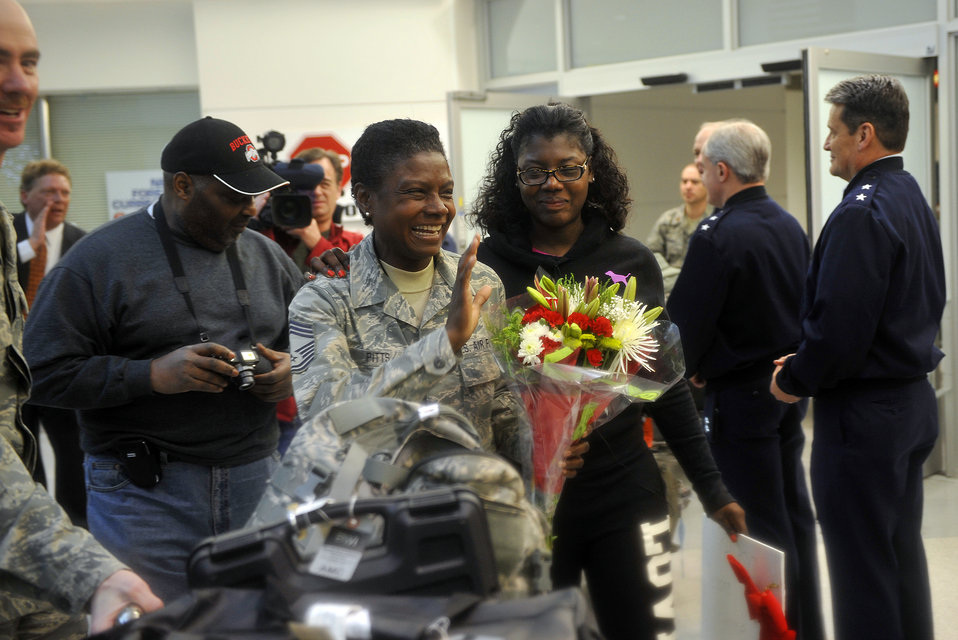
Last Airmen in Iraq return

Chief Master Sgt. Ruthelma Pitts returns from a deployment to Iraq and is greeted by her family and community members Dec. 20, 2011 at Baltimore/Washington International Thurgood Marshall Airport in Baltimore, Md. Pitts was one of more than 200 Airmen who were the last to leave Iraq. Pitts is assigned to the Air National Guard 113th Wing in the District of Columbia.